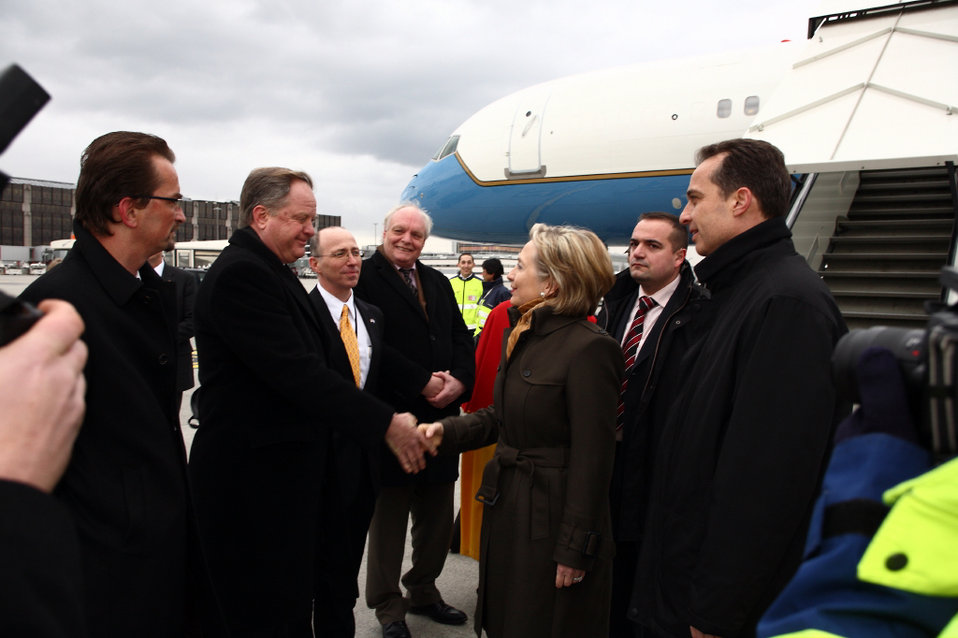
Arrival in Geneva, Switzerland

U.S. Secretary of State Hillary Rodham Clinton arrives in Geneva, Switzerland March 6, 2009.